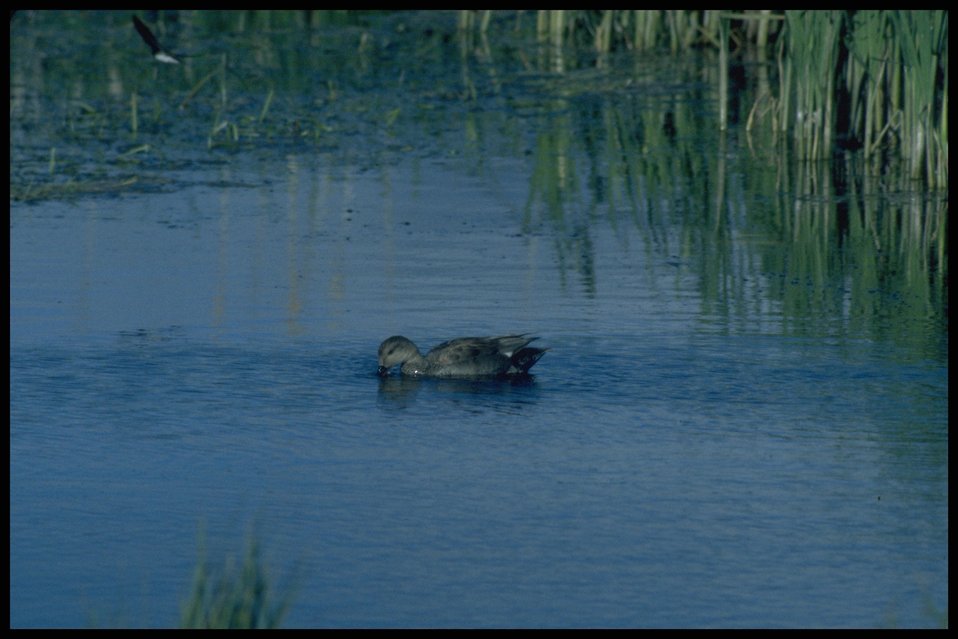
Duck, Lakeview District.